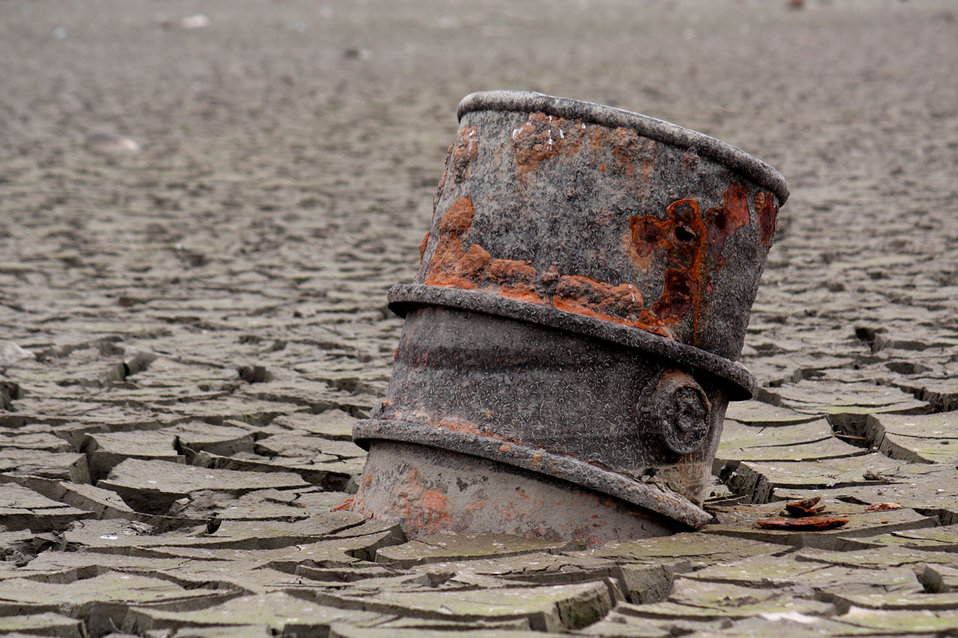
Barrel

Empty dam.